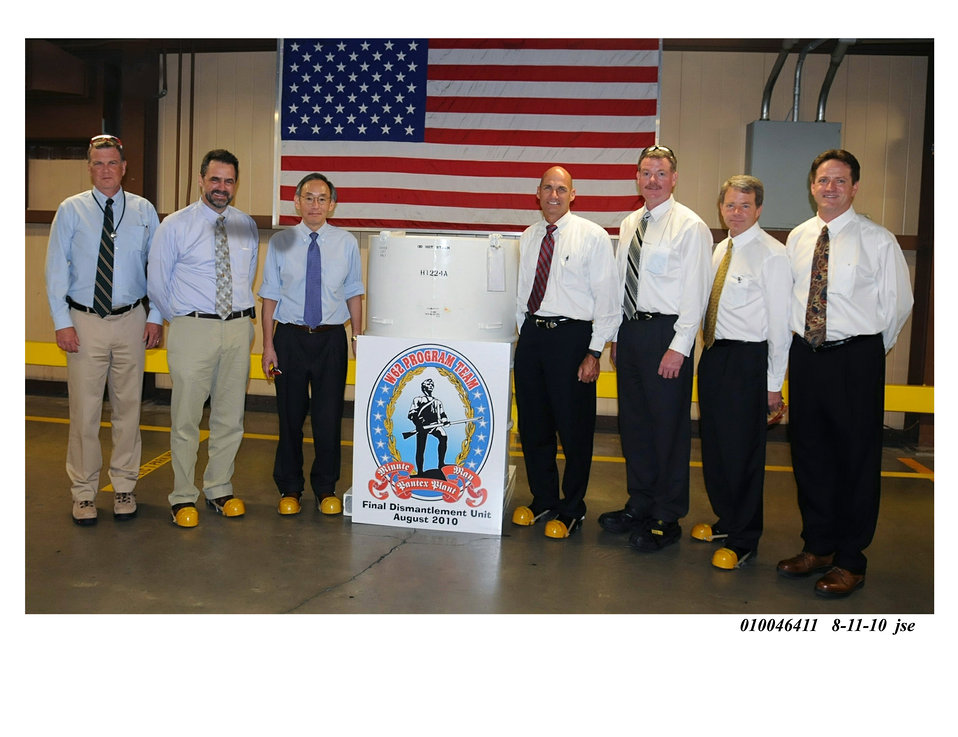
Secretary Chu, NNSA Administrator Thomas D’Agostino and Pantex manager Steve Erhart join NNSA and Pantex tea, in celebrating the dismantlement of the last W62 nuclear warhead. Secretary Chu participated in the final dismantlement during his Aug. 11, 201